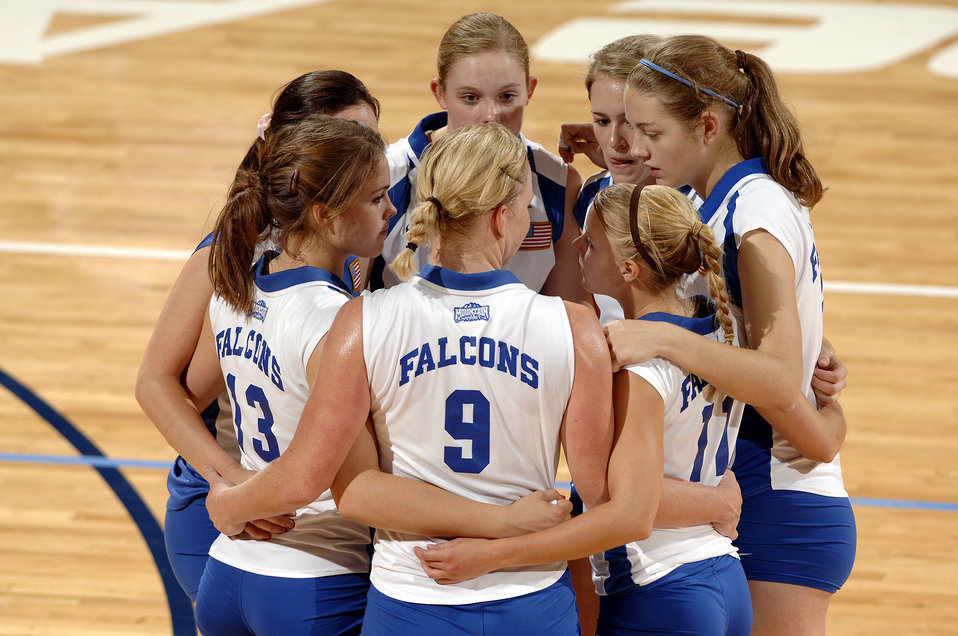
Volleyball: Falcons suffer tough losses

The U.S. Air Force Academy women's volleyball team takes a time out during action against Brigham Young University as the Air Force volleyball team dropped a three-game decision to the 23rd-ranked Cougars Sept. 29 at the Academy's Clune Arena in Colorado. The Falcons return to the road to take on the San Diego State Aztecs Oct. 4 before heading to face the University of Nevada, Las Vegas Oct. 6.